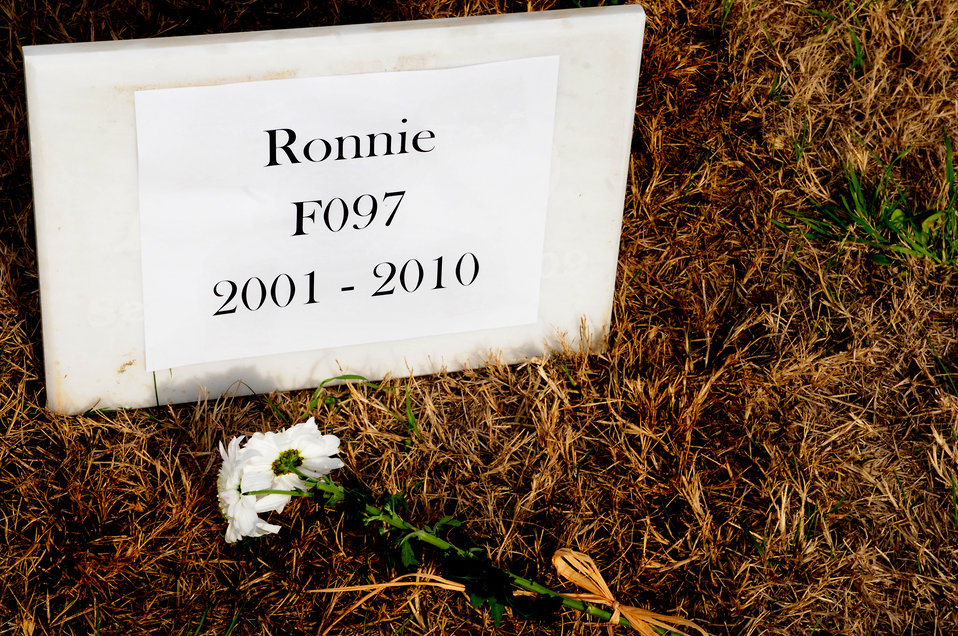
Incirklik members honor fallen SFS defender

Flowers lay in front of a plaque dedicated to Ronnie, a fallen 39th Security Forces Squadron military working dog, during his memorial ceremony Feb. 25, 2010, at Incirlik Air Base, Turkey.